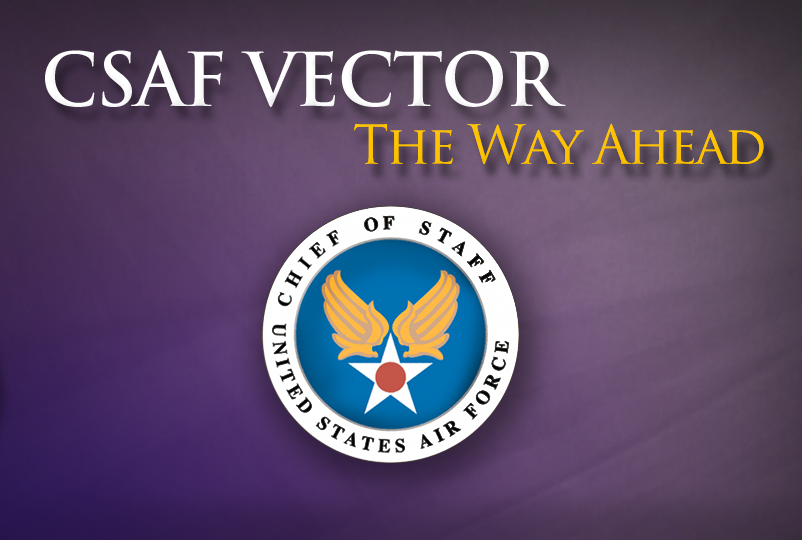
CSAF Vector